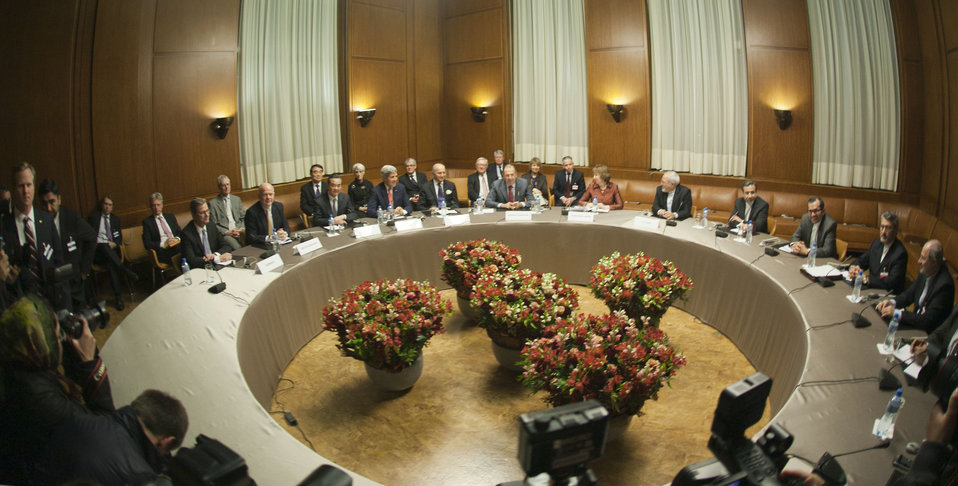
P5 1 Talks With Iran in Geneva, Switzerland

U.S. Secretary of State John Kerry sits sits with his fellow P5 1 foreign ministers -- as well as European Union High Representative Catherine Ashton and Iranian Foreign Minister Javad Zarif, far right -- at the United Nations Headquarters in Geneva, Switzerland, after the group concluded negotiations about Iran's nuclear capabilities on November 24, 2013.